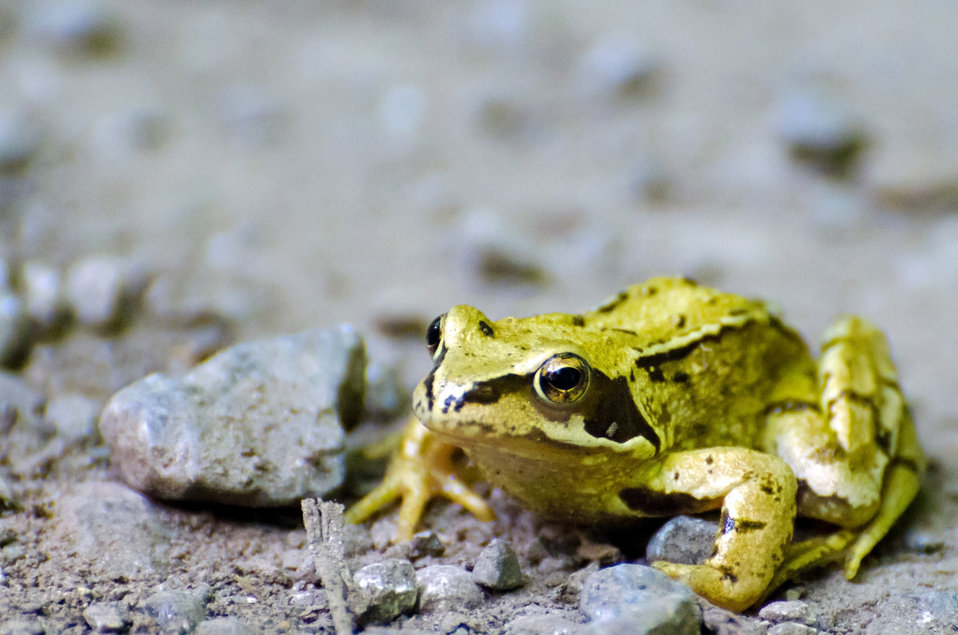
Frog

Green frog - animals.